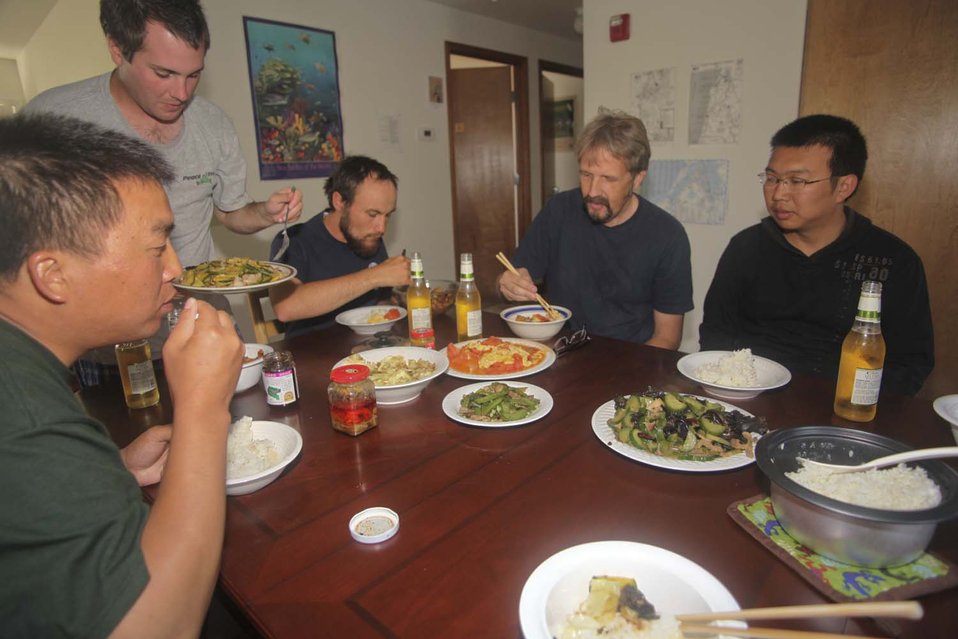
Xu and Jia cooked dinner with a rice cooker brought from China